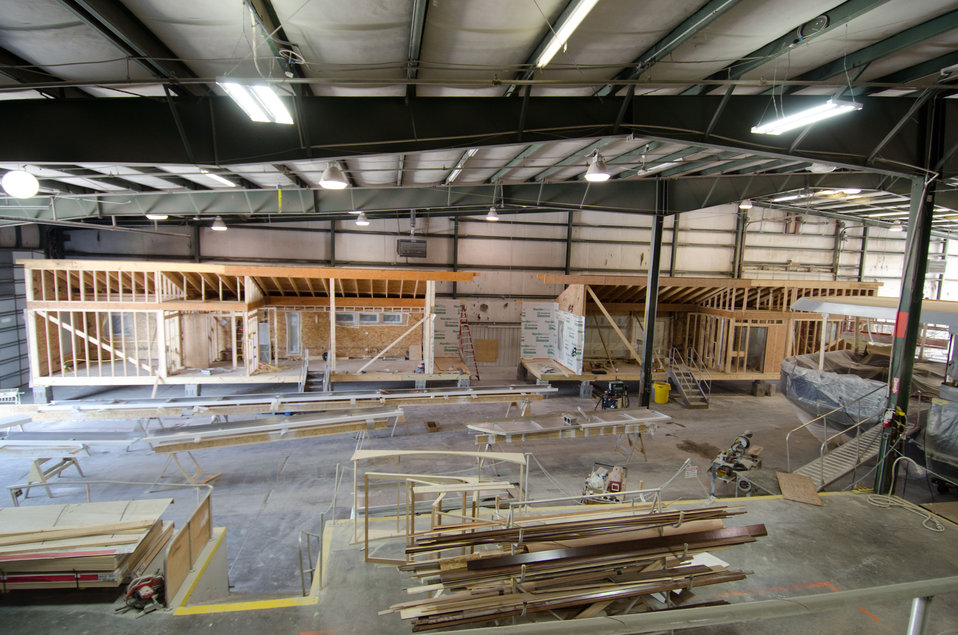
Stardust Industries is helping retool and redirect Kentucky’s houseboat manufacturing industry – which has been decimated because of the struggling economy – by using its facilities and manpower to create low-cost housing that is energy efficient. Rural Development obligated $499,000 in Rural Business Enterprise Grant funds to support this unique endeavor. Up until a few years ago, there were several successful houseboat manufacturers in the four-county area surrounding the city of Somerset. Most have now ceased operation or drastically reduced output, which has led to dramatic, long-term job loss. These new energy efficient homes will be constructed in redesigned, refitted houseboat factories using local workers that have been retrained.